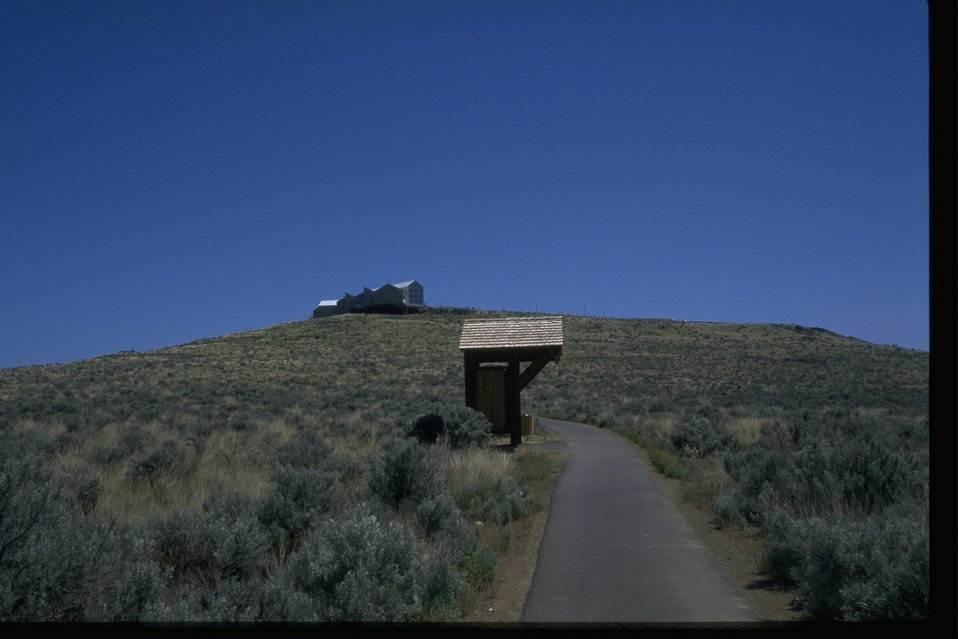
Distant view of the National Historic Oregon Trail Interpretive Center from a hiking trail.